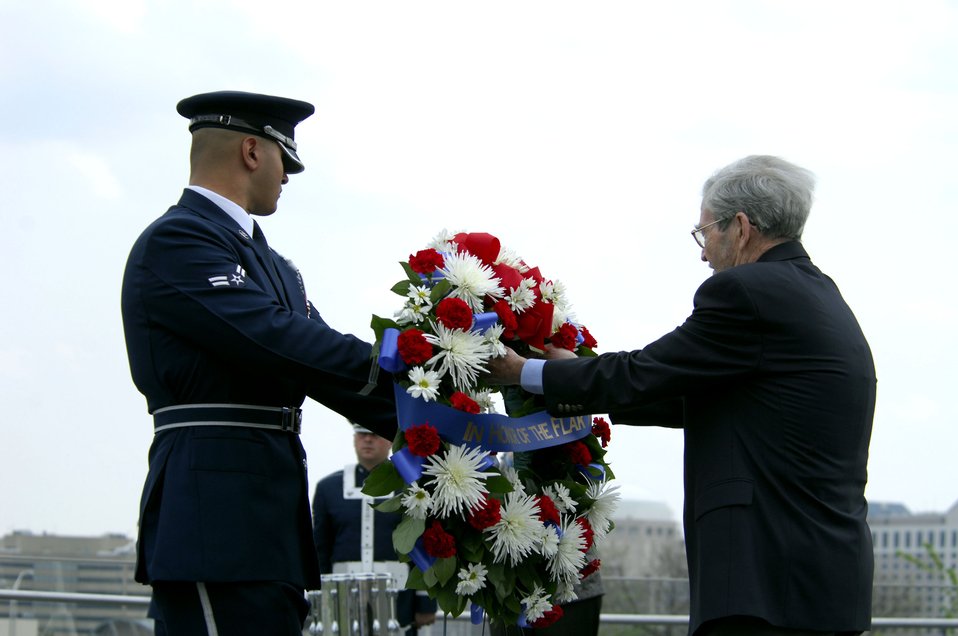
WWII bomber crew awarded Distinguished Flying Cross

Airman 1st Class Kirk Campbell and former 1st Lt. Edward L.